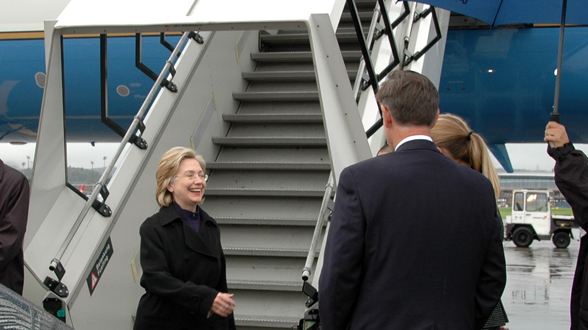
Secretary Clinton Arrives in Zurich

U.S. Secretary of State Hillary Rodham Clinton is greeted by U.S. Ambassador to Switzerland Donald S. Beyer and Ms. Alexandra Baumann (Federal Department of Foreign Affairs) during her arrival in Zurich, Switzerland October 9, 2009.